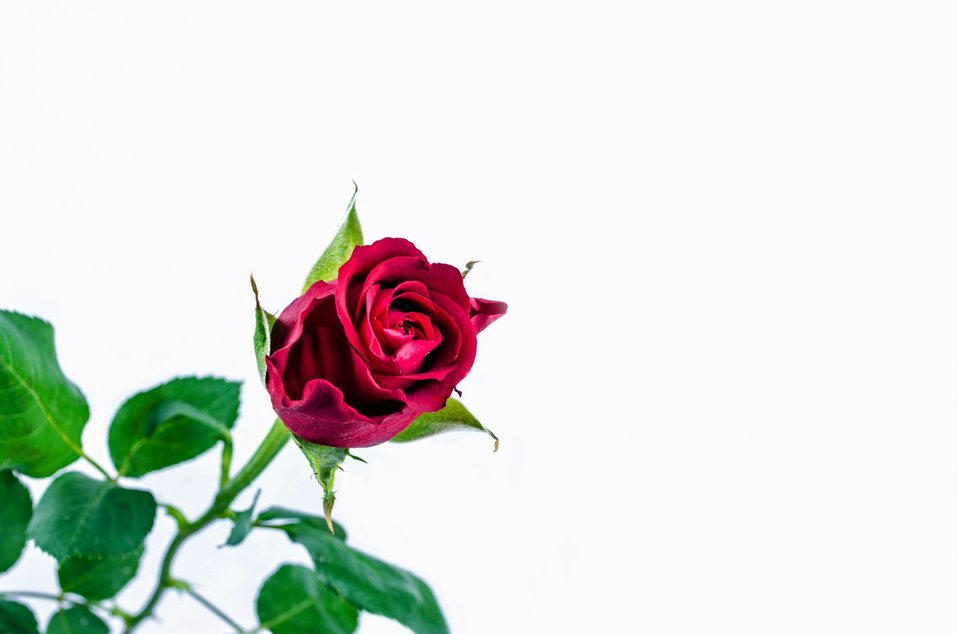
Flower

Flowers on the white background.